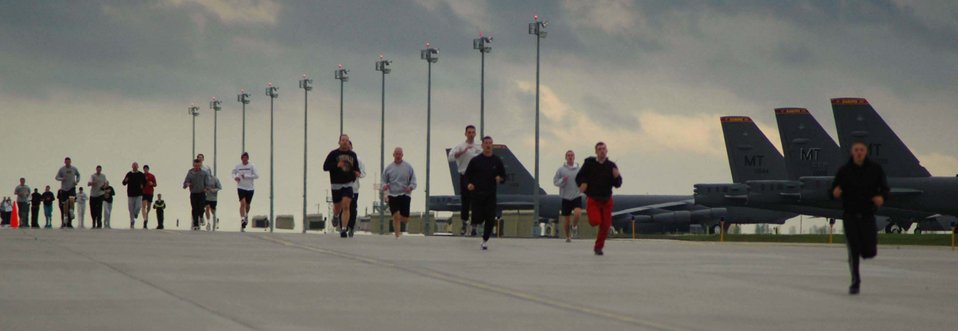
Run this way

MINOT AIR FORCE BASE, N.D. -- Airmen from across the base run past several B-52 Stratofortresses during a fun run on the runway here May 26. The runway is shut down until June 5 for maintenance.